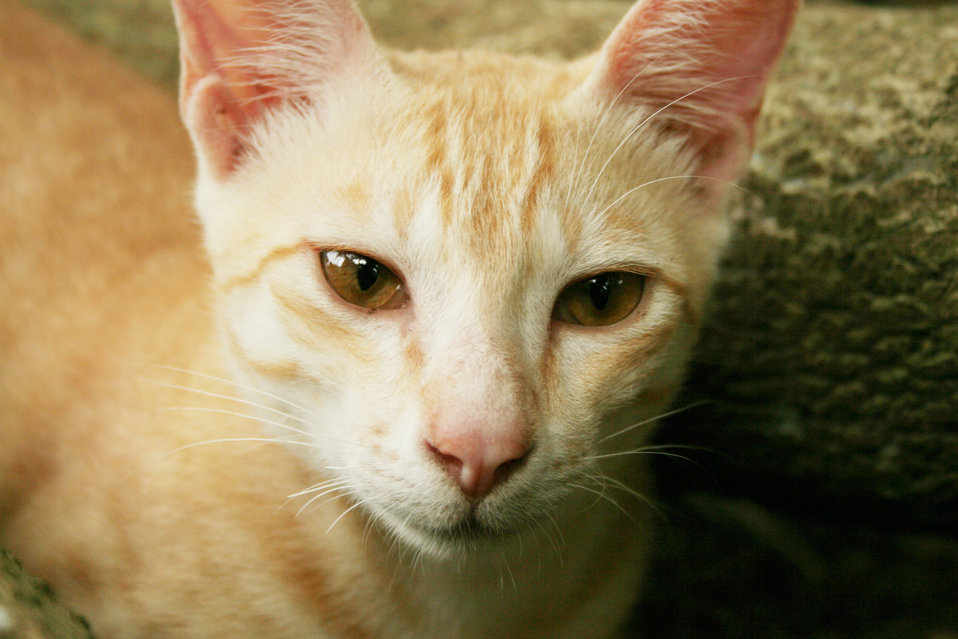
This work is dedicated to Public Domain